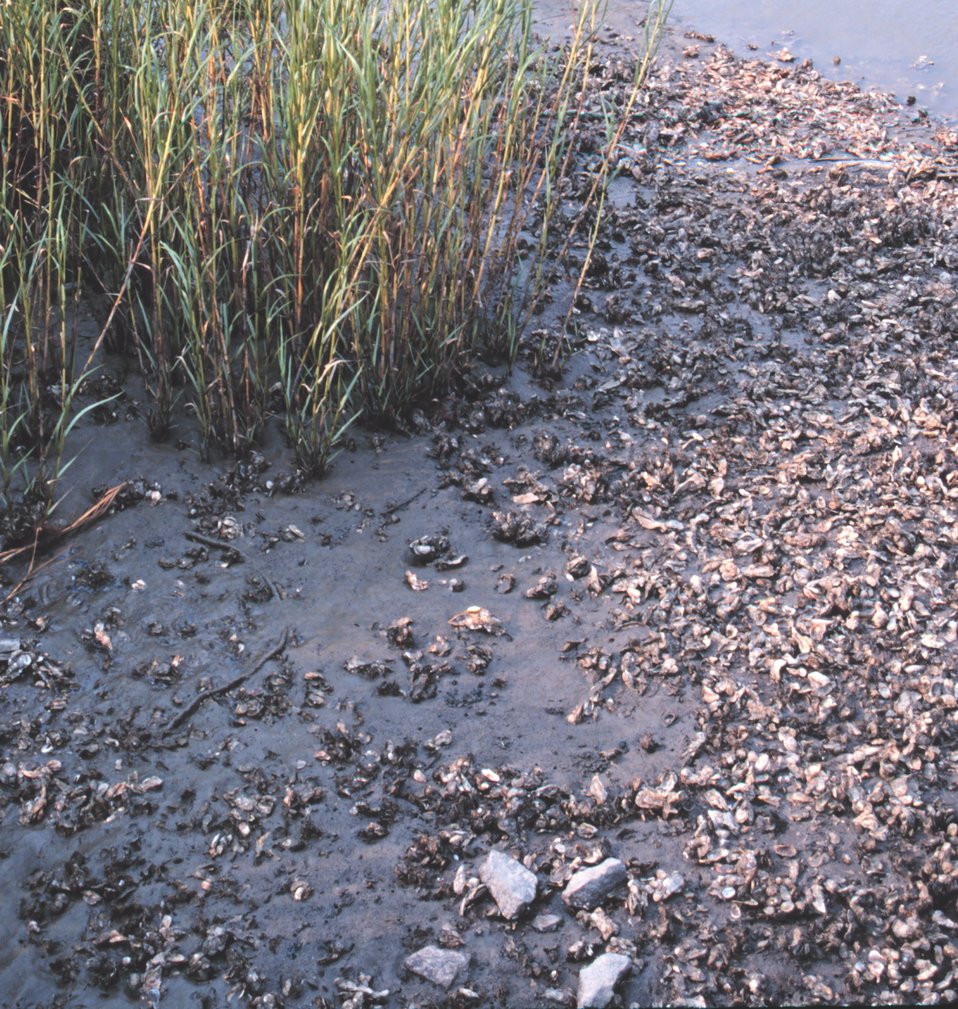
Tidal mudflats